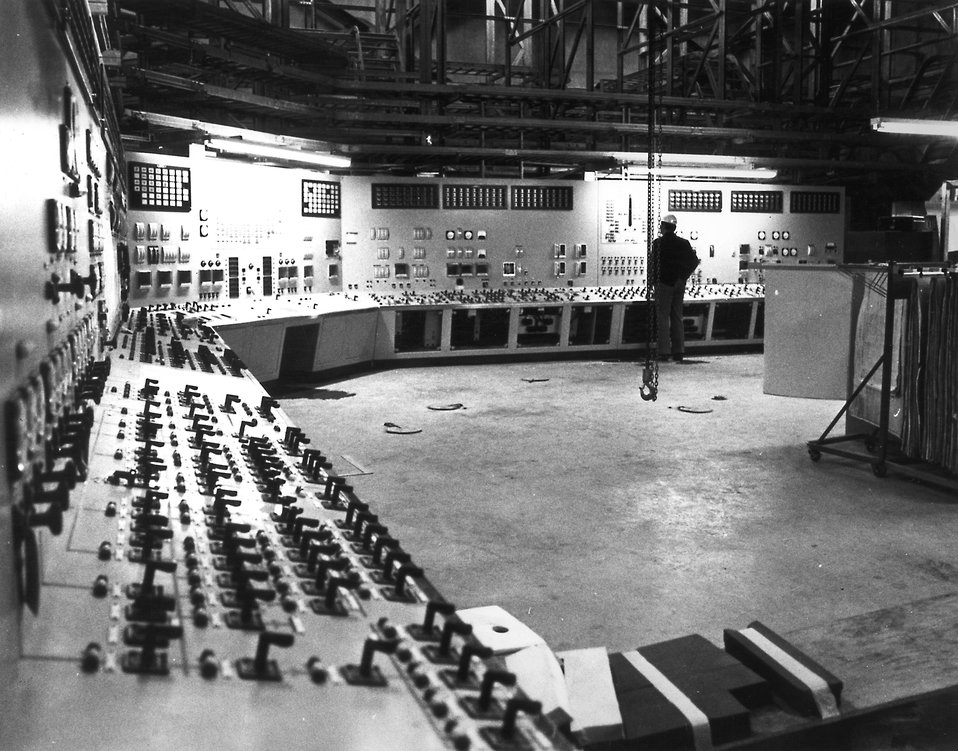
Duane Arnold.......Control room of the Duane Arnold Energy Center near Palo, Iowa. Circa 1974.